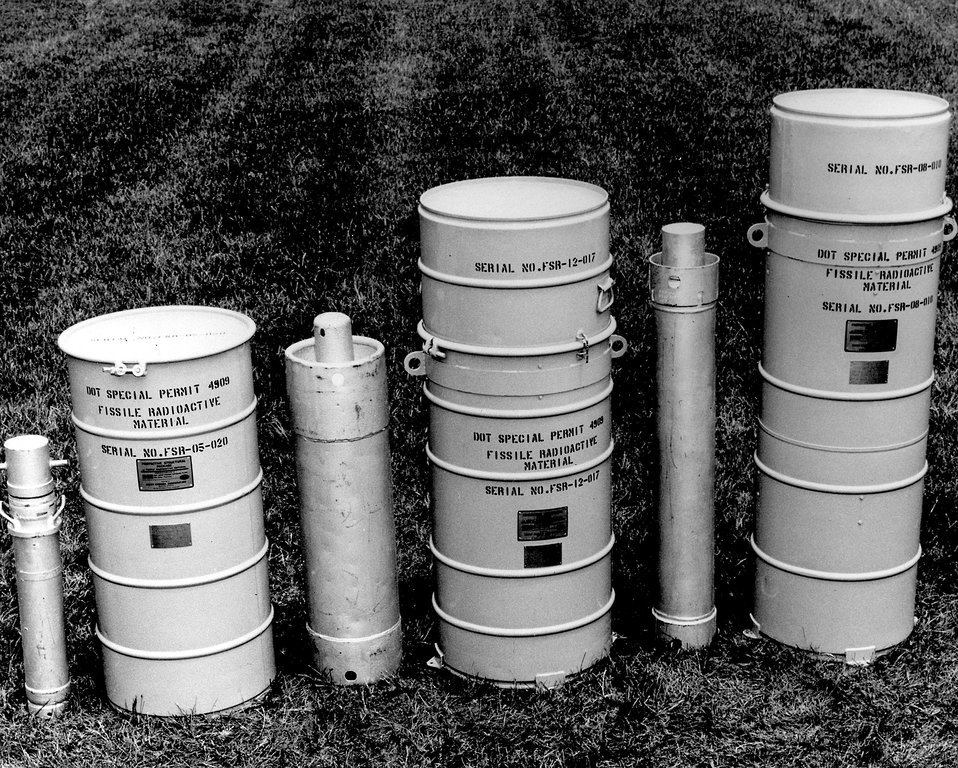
As nuclear fuel cycle activities continue to expand, research and development on packaging and safe transportation of nuclear materials continues. This photo shows several protective shipping packages for UF6 cylinders. These packages and their high temperature phenolic resin foam insulation were developed at the Oak Ridge Gaseous Diffusion Plant to meet ERDA and Department of Transportation (DOT) requirements. Circa 1971.